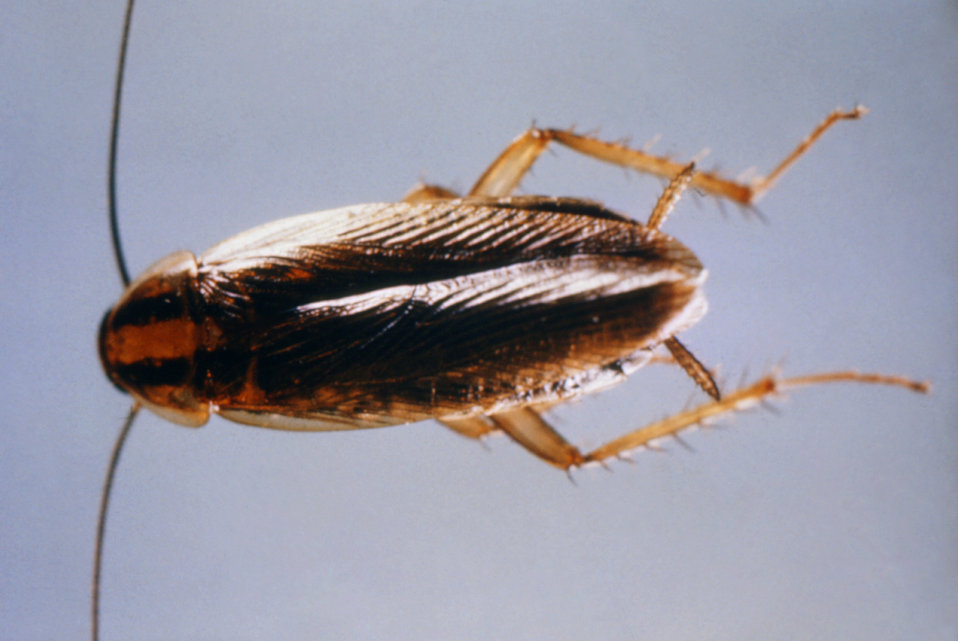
Close-up of a cockroach

This photograph of a German cockroach was taken during a 1972 study of disease carriers, and pests of migrant labor camps.